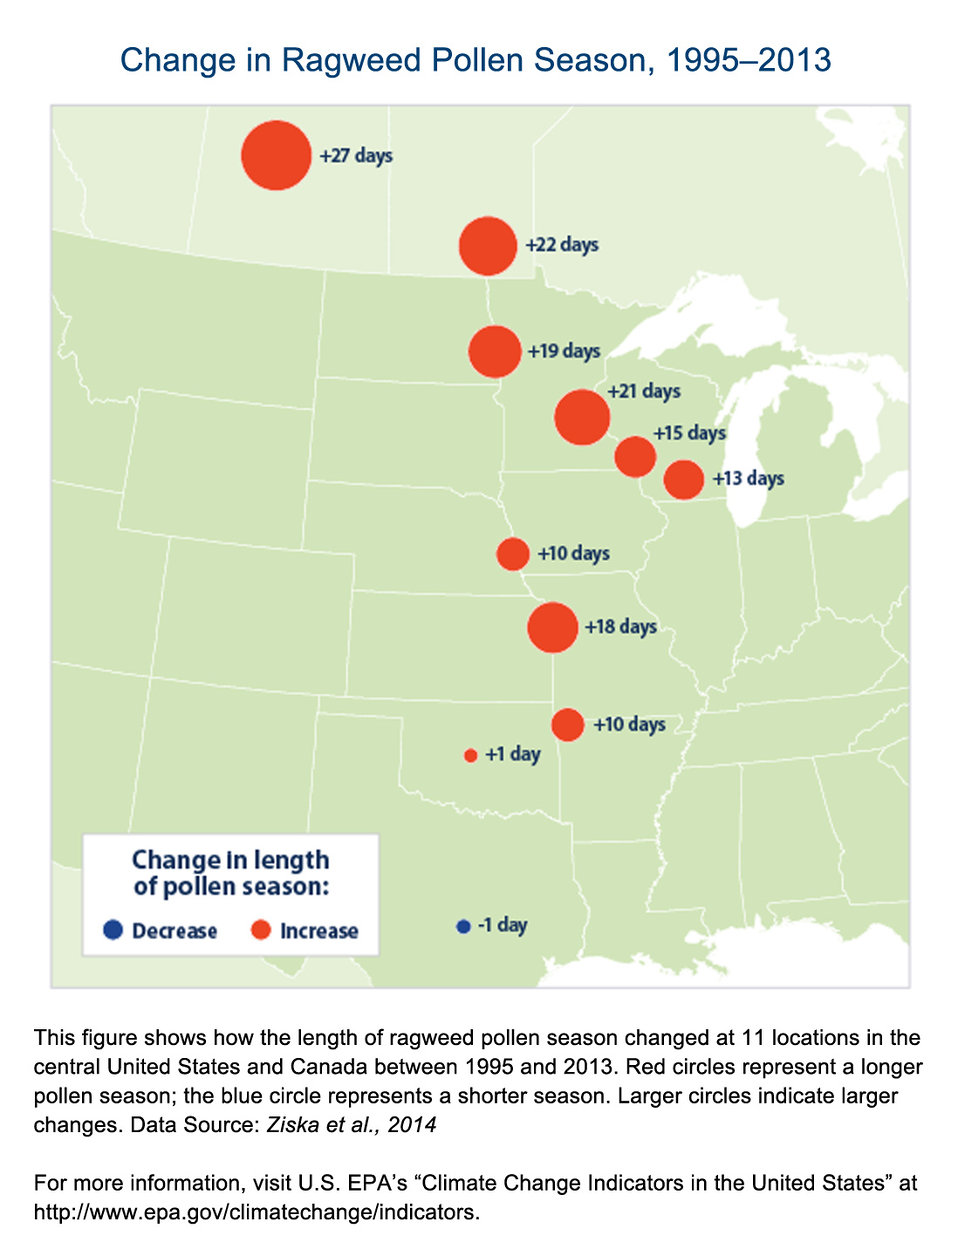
Changes in Pollen Season

The length of ragweed pollen season has increased, especially in northern and central states.